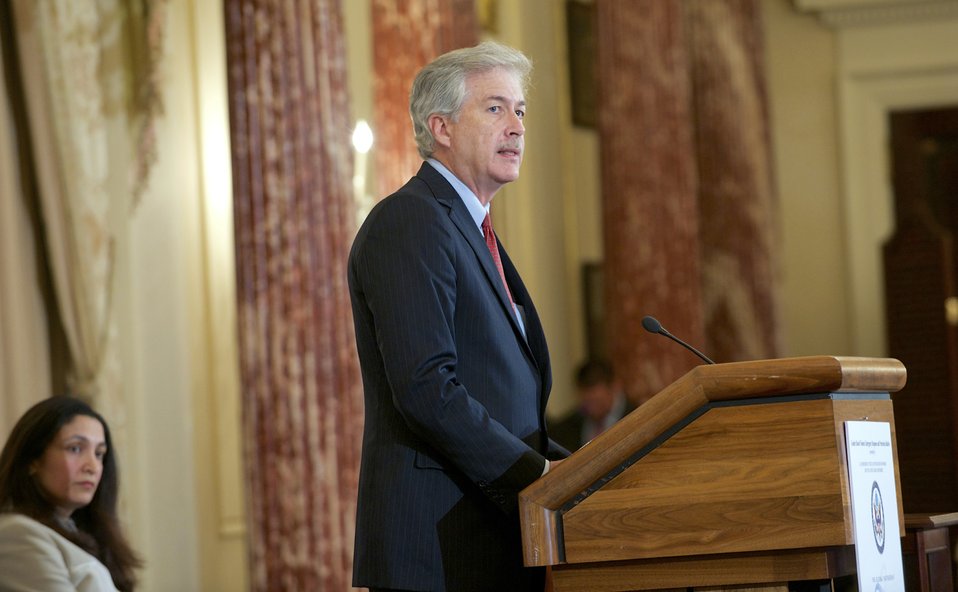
Deputy Secretary Burns Delivers Remarks at the Launch of the Gender-Based Violence Emergency Response and Protection Initiative

With Acting Assistant Secretary for Democracy, Human Rights and Labor Uzra Zeya looking on, Deputy Secretary of State Bill Burns delivers remarks at the launch of the Gender-Based Violence Emergency Response and Protection Initiative at the U.S. Department of State in Washington, D.C., on March 20, 2014.